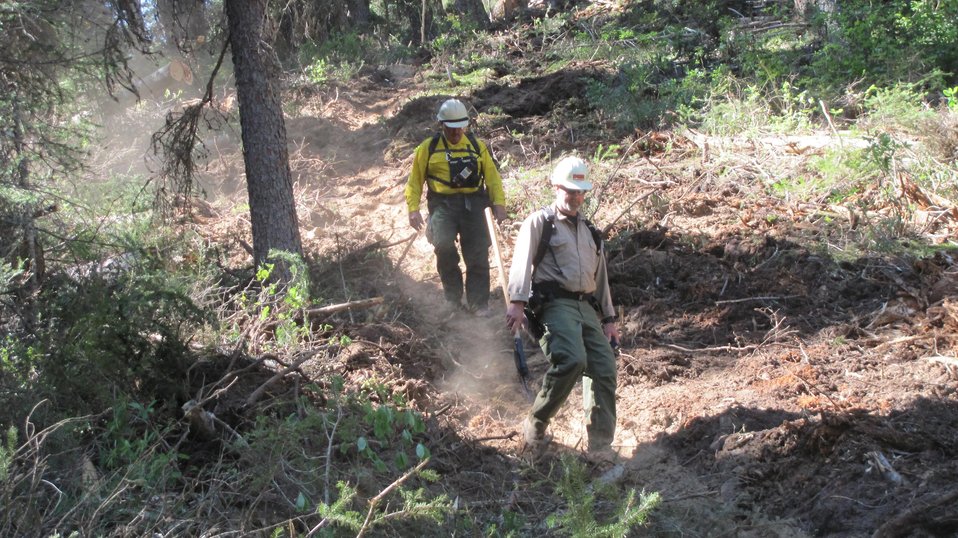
Division Supervisor and Structure Protection Specialist inspect completed contingency line linking roads together near Tough Creek Saddle at the Gold Pan Fire. The area had a slope of 55%, so hand line was constructed. The Gold Pan Fire in the Bitterroot National Forest near Conner, MT began by lightning on Jul. 16, 2013 by lighting have consumed approximately 16,412 acres.